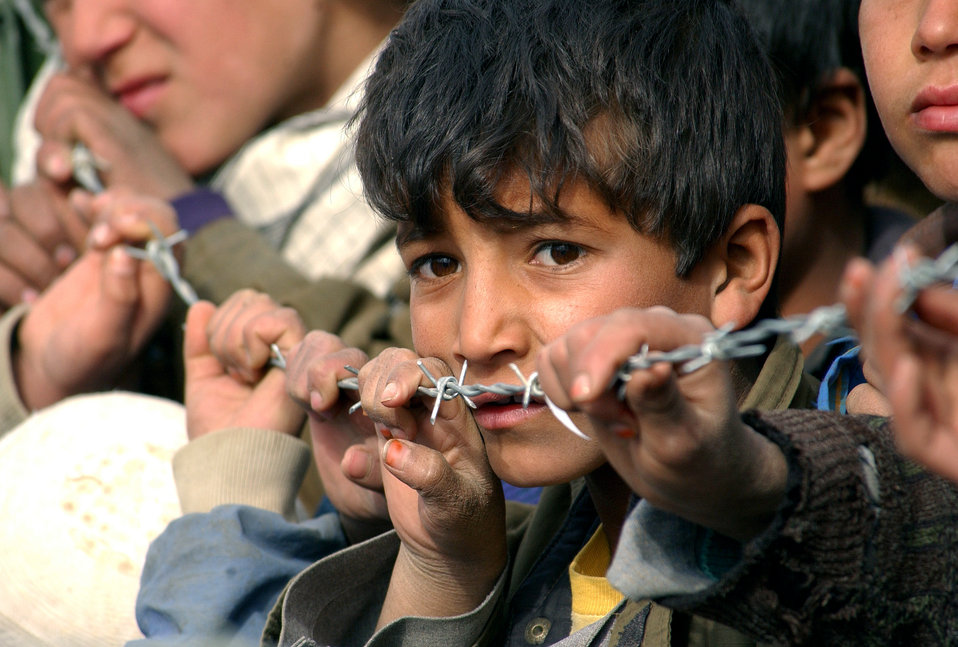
Waiting

OPERATION ENDURING FREEDOM -- An Afghan boy from the Aroki Province of Kapisa in Afghanistan waits to be seen by U.S. military medics Jan. 21, 2003. Airmen from the 455th Air Expeditionary Wing, along with soldiers from the 48th Combat Support Hospital and the 924th Korean Medical hospital, visited the province to offer health care to local residents.